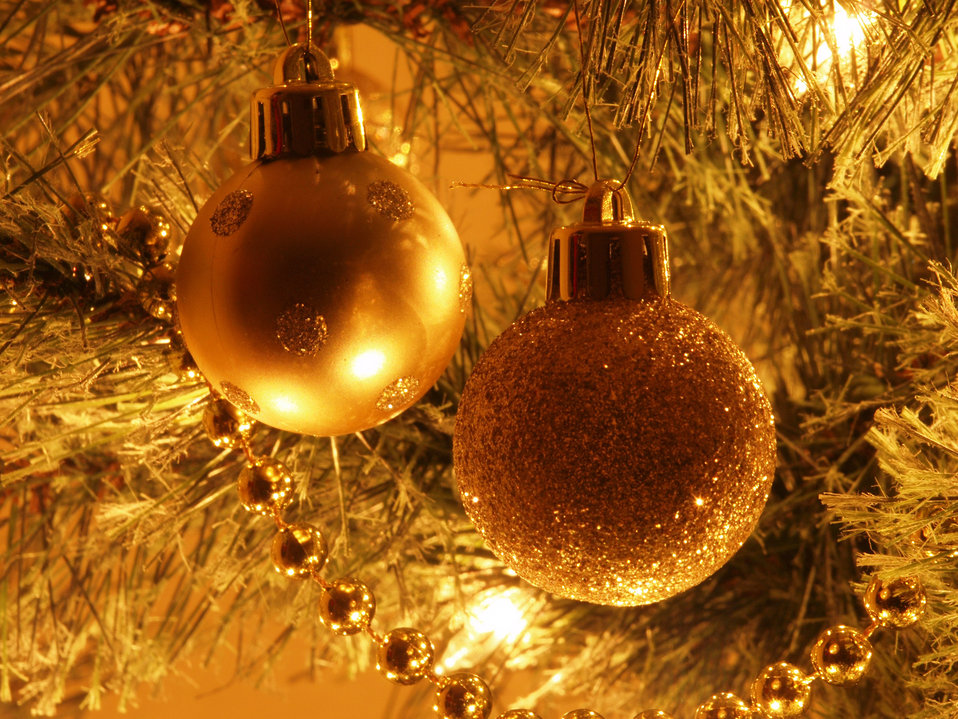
Christmas tree decorations

Beautiful christmas gold christmas tree ornaments.